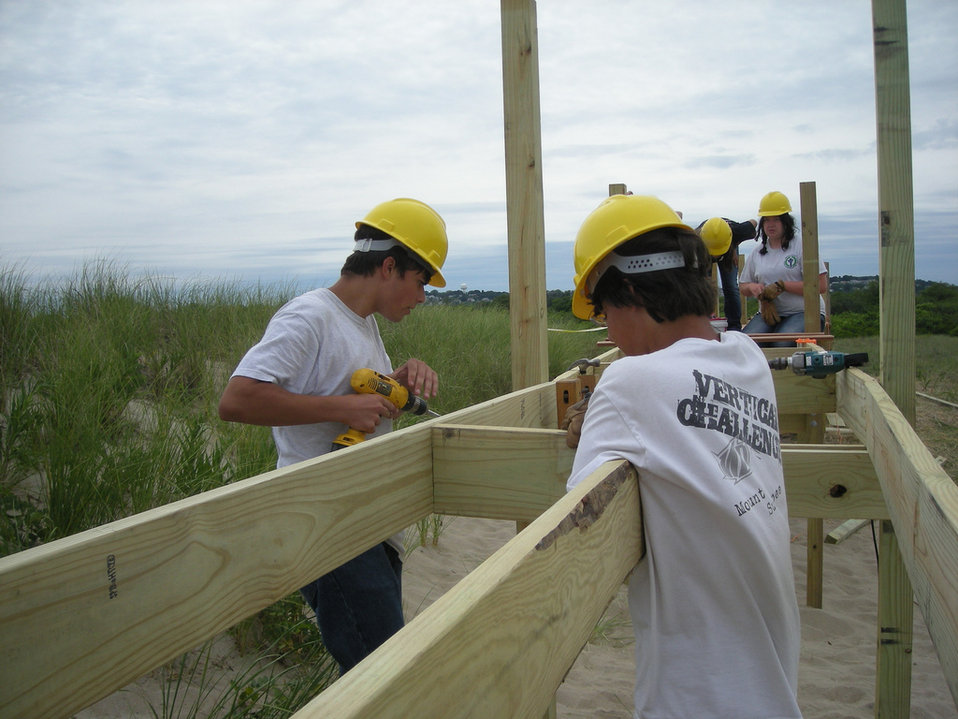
YCC construction

U.S. Fish and Wildlife Service